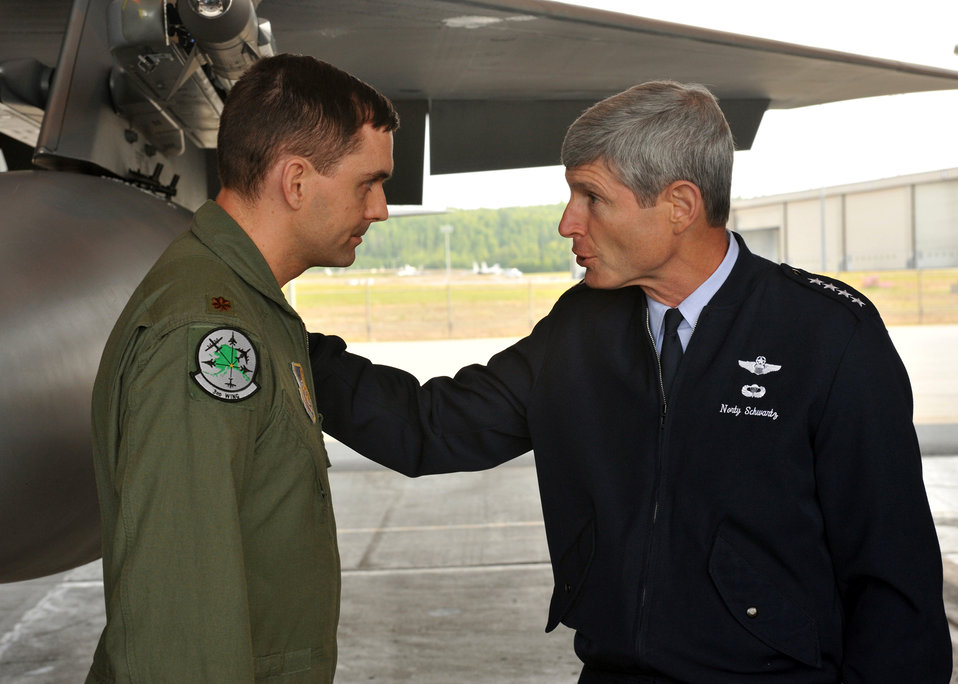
CSAF visit to Elmendorf AFB

Air Force Chief of Staff Gen. Norton Schwartz thanks Maj. Christopher Ridlon, chief of the 3rd Operations Group, for showing him around the combat alert cell July 6 during his visit to Elmendorf Air Force Base, Alaska.